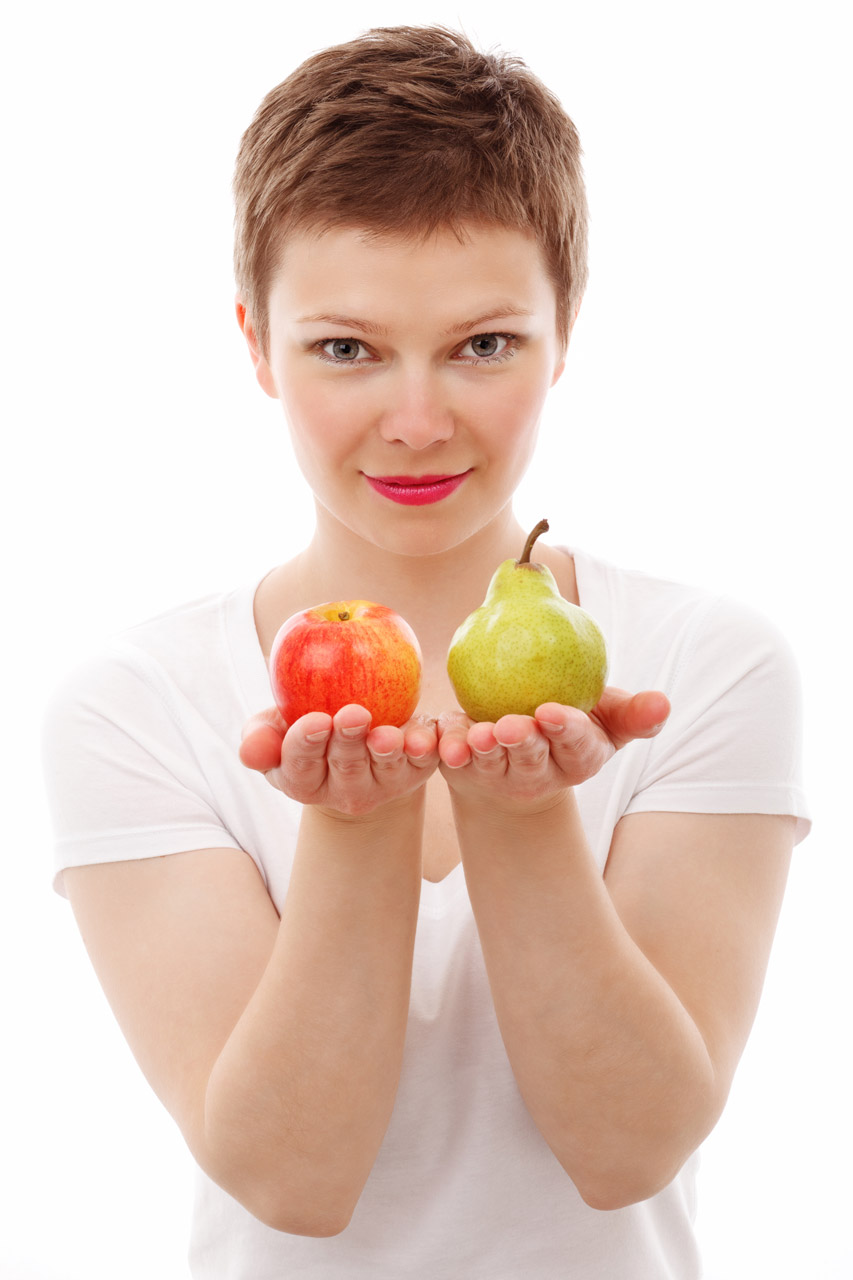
Woman with apple and pear

Young woman holding an apple and a pear isolated on white background.